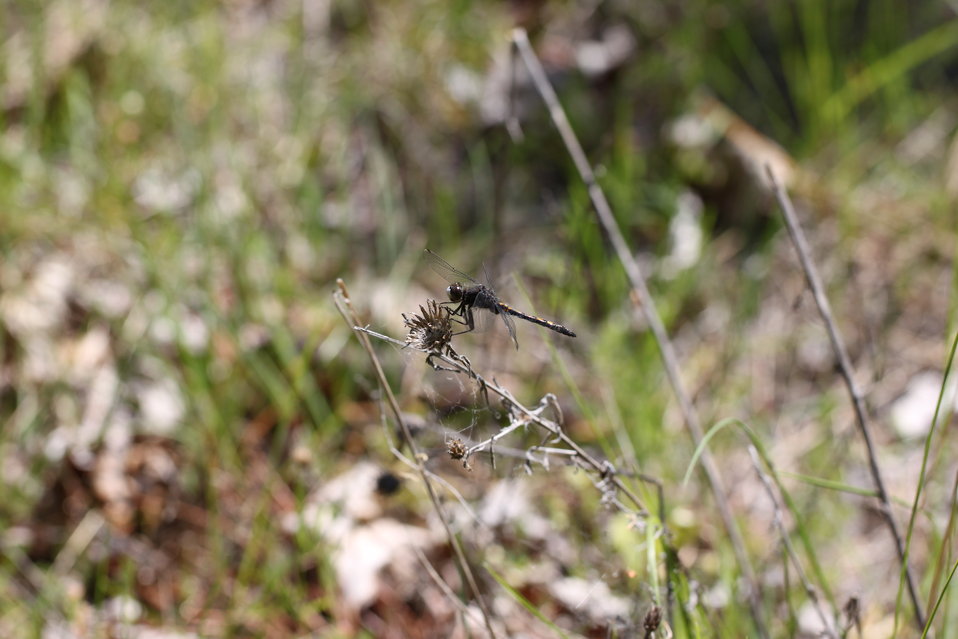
Dot-tailed Whiteface

Leucorrhinia intacta commonly found on the Refuge near wetland habitat.